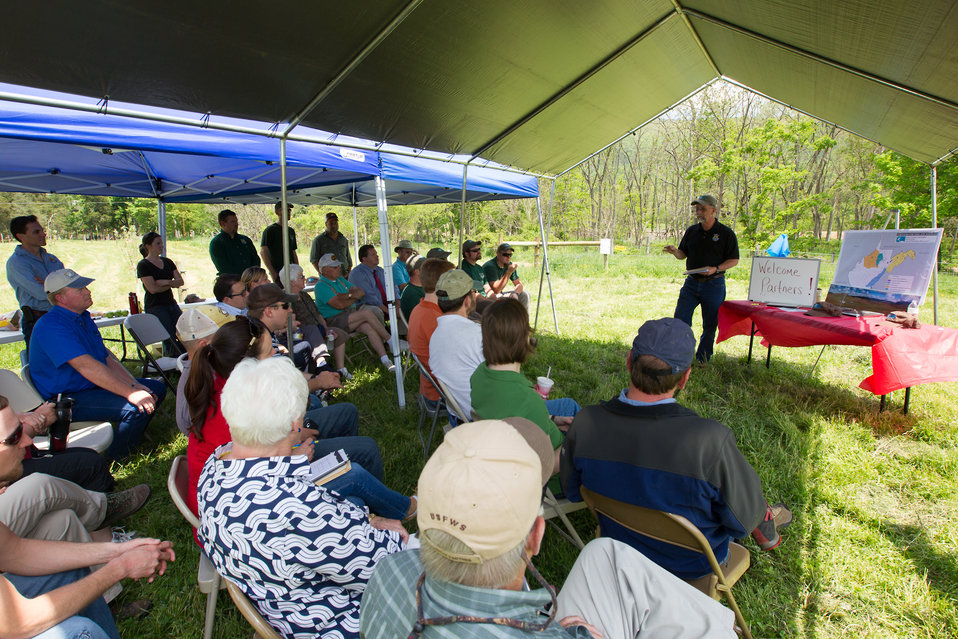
Celebrating 1 Million Feet of Conservation Fence in WV

Partners for Fish and Wildlife Program